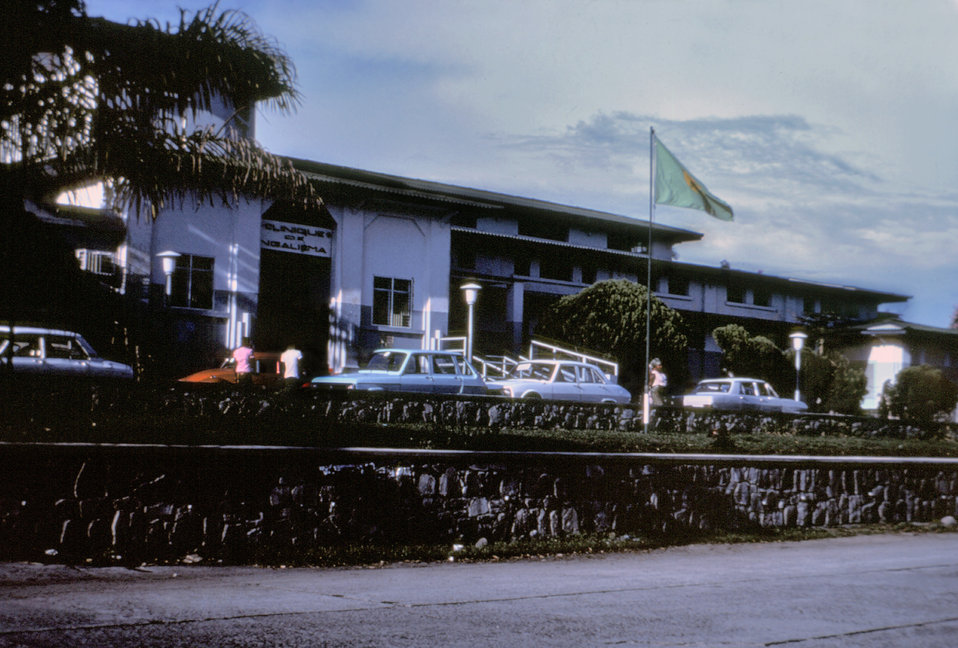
This 1976 photograph showed the front of Ngaliema Hospital, located in Kinshasa, Zaire, the Nation's capital, where some of the earliest Ebola patients died in the fall of that year.